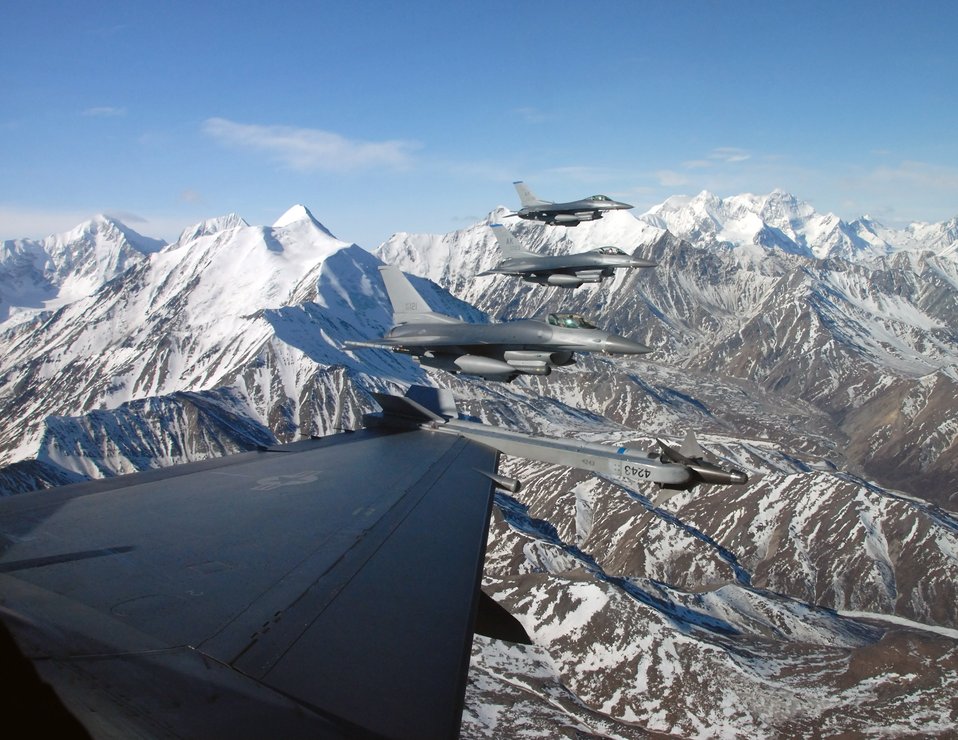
Show of force

F-16 Fighting Falcons fly in formation April 25 over the Pacific Alaska Range Complex. The F-16s are from the 18th Fighter Squadron at Eielson Air Force Base, Alaska. Members of the 18th FS conduct air operations for combat-ready F-16s, working closely with the 355th Fighter Squadron to provide close-air support, forward-air control (airborne), battlefield air interdiction, and offensive counter air.